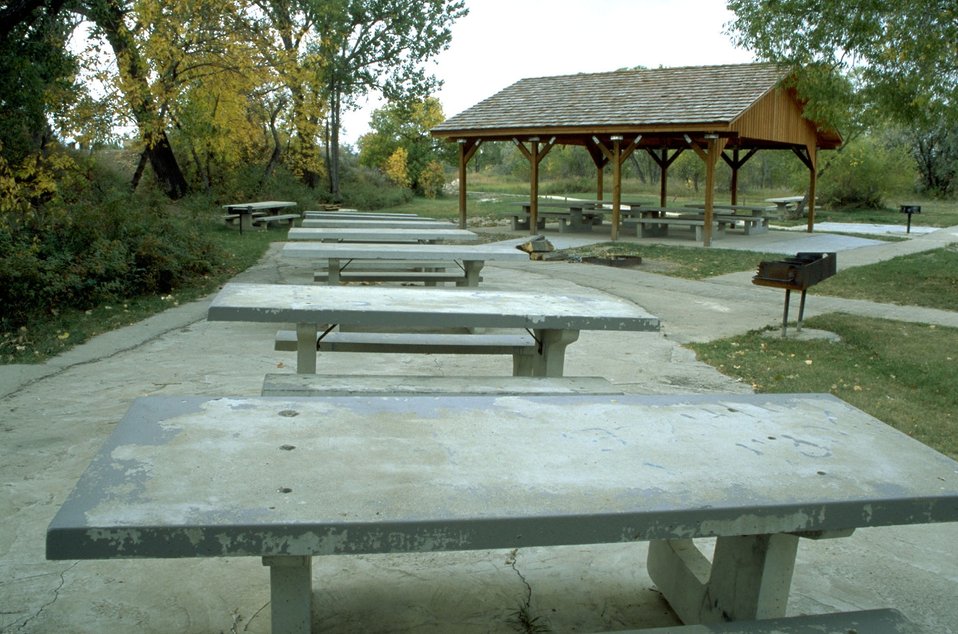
Picnic tables at the Matthew Recreation Site